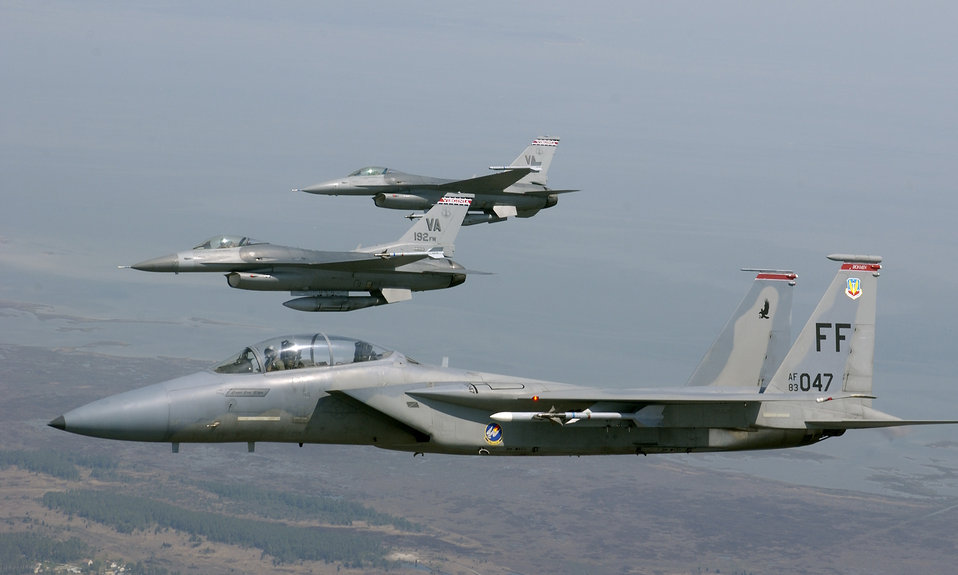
Birds of a feather ...

OVER VIRGINIA -- An F-15 Eagle is joined in formation by F-16 Fighting Falcons during a training sortie here April 19. The F-15 is assigned to the 71st Fighter Squadron at Langley Air Force Base, Va., and the F-16s are assigned to the Virginia Air National Guard's 192nd Fighter Wing in Richmond.